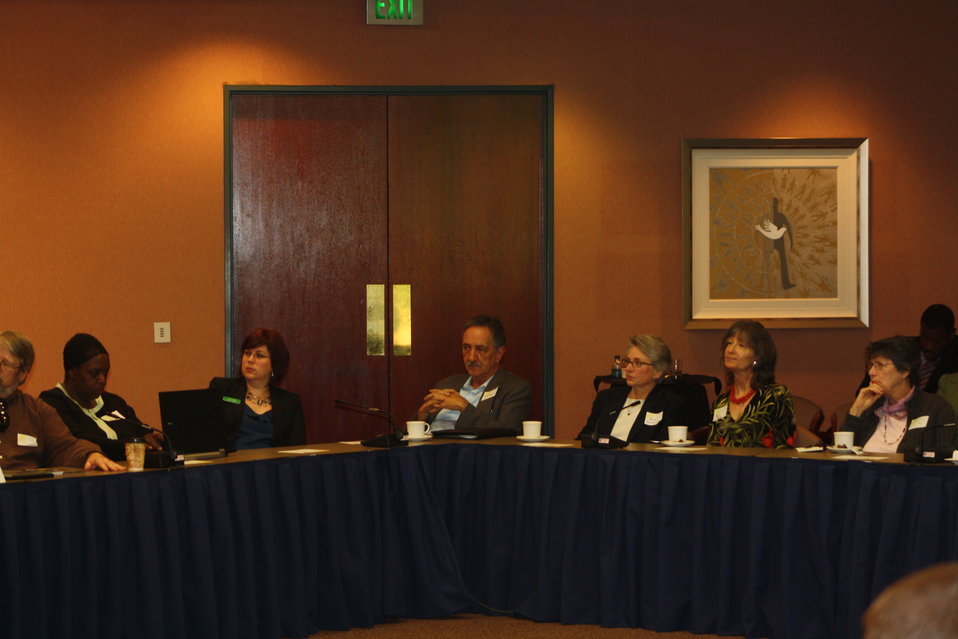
Faith-Based and Neighborhood Partnership launch at Atlanta's Carter Center